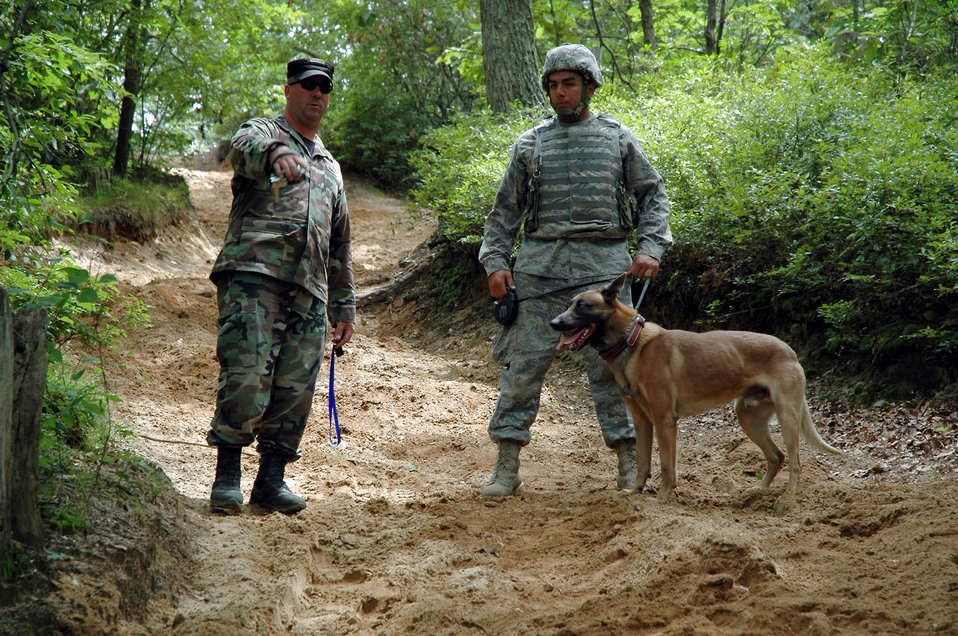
Teaching K-9 detection tactics

Tech. Sgt. Jeffrey Dean, instructor and course director for the Air Force Phoenix Warrior Training Course's canine track, shows Staff Sgt. Matthew Hernandez where to lead his military working dog Grant during detection training for Phoenix Warrior July 10, 2008, on a Fort Dix, N.J., range. Tech. Sgt. Jeffrey Dean shows Staff Sgt. Matthew Hernandez where to lead his military working dog, Grant, during detection training for Phoenix Warrior July 10 at Fort Dix, N.J. Both Sergeant Tener and Filo, both from Royal Air Force Lakenheath, England, attended training in Phoenix Warrior in preparation for an upcoming deployment. Phoenix Warrior is taught by members of the Air Force Expeditionary Center's Expeditionary Operations School and 421st Combat Training Squadron. Sergeant Dean is an instructor and course director for the Air Force Phoenix Warrior Training Course's canine track.